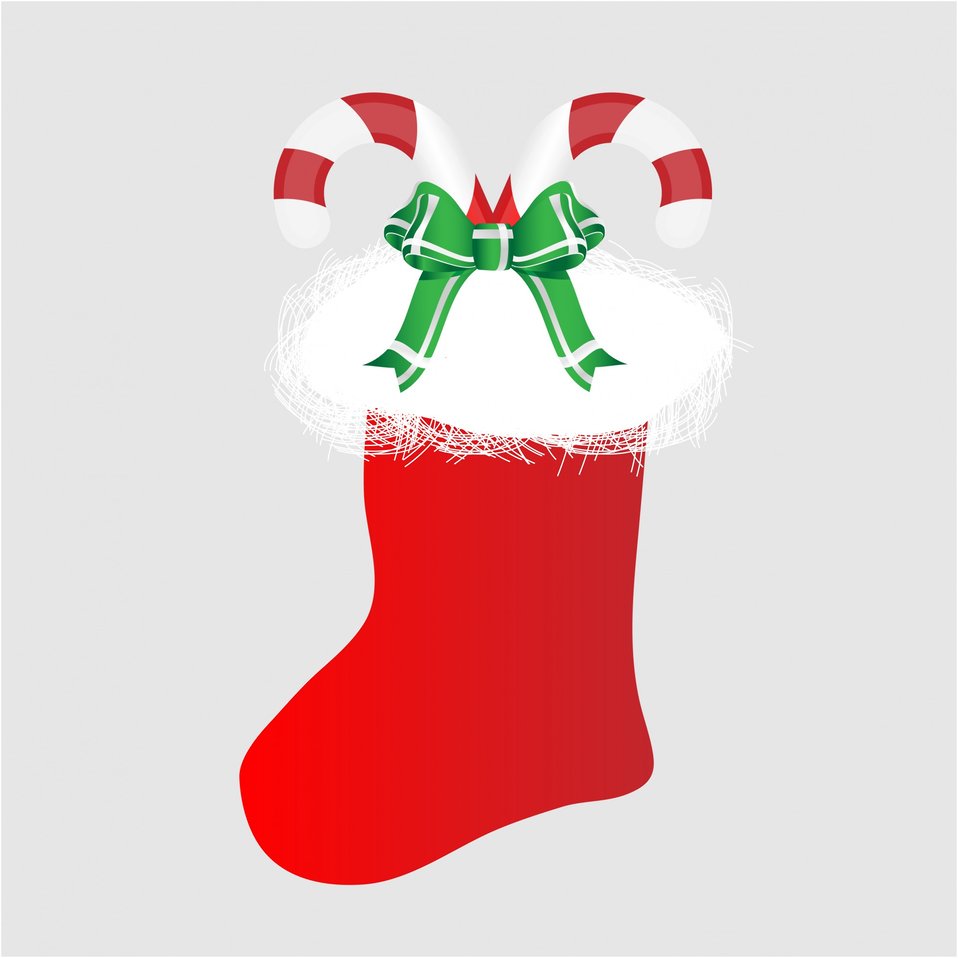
Christmas stocking candy cane

Red christmas stocking with candy cane and green and silver ribbons and bow.